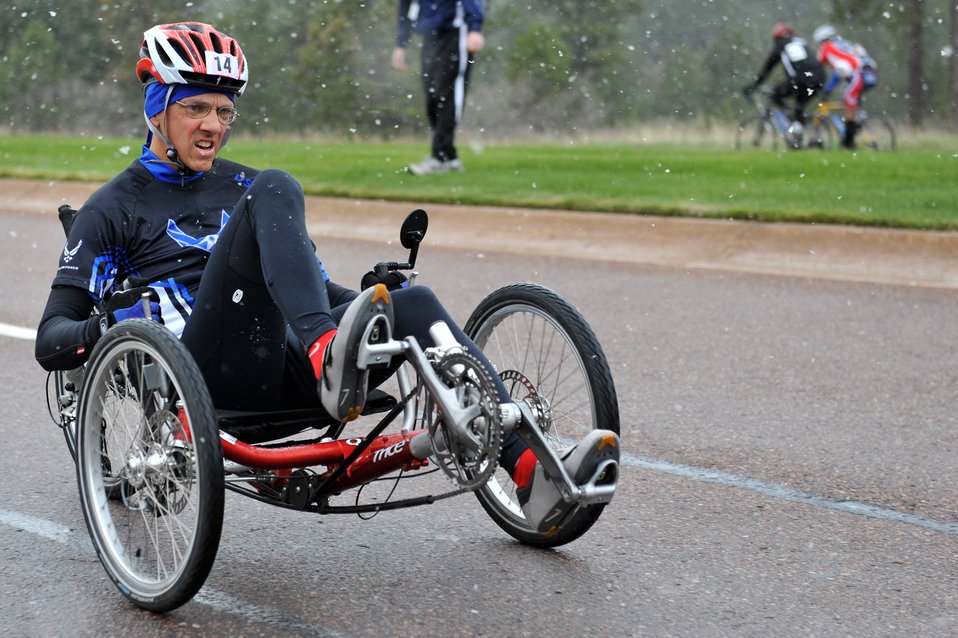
Warrior Games AF Cycling

Senior Master Sgt. Michael Sanders races to the finish line of the 10-kilometer recumbent bike race for the inaugural Warrior Games May 13, 2010, at the U.S. Air Force Academy in Colorado Springs, Colo. Sergeant Sanders is one of some 200 disabled veterans participating in the Paralympic-style competition May 10 through 14.